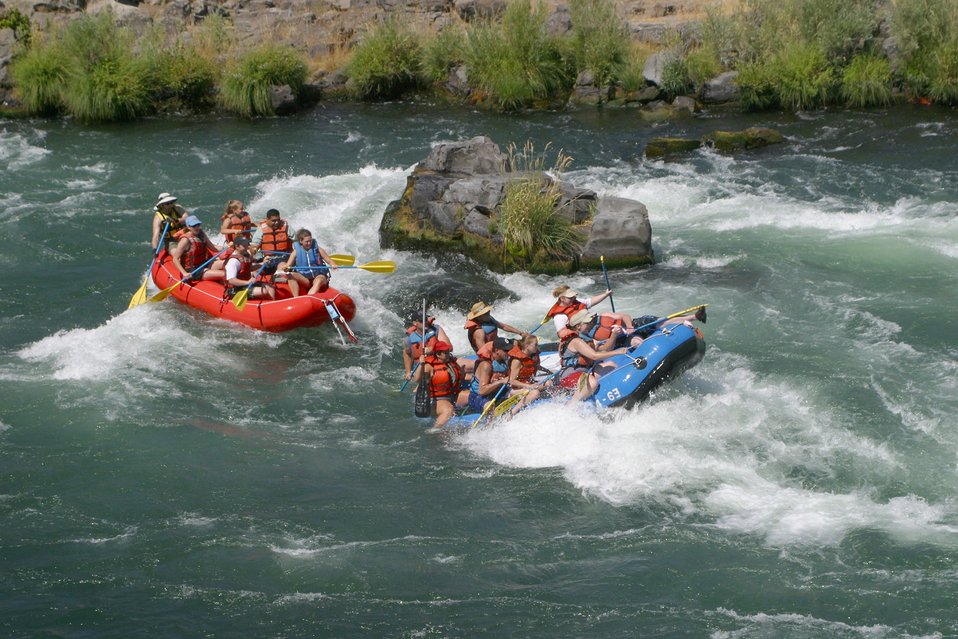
Wapinitia Rapids class III, has large roller coaster waves. 7/26/03 Pelton Dam 3600 cfs: Moody Rapids 4300 cfs.